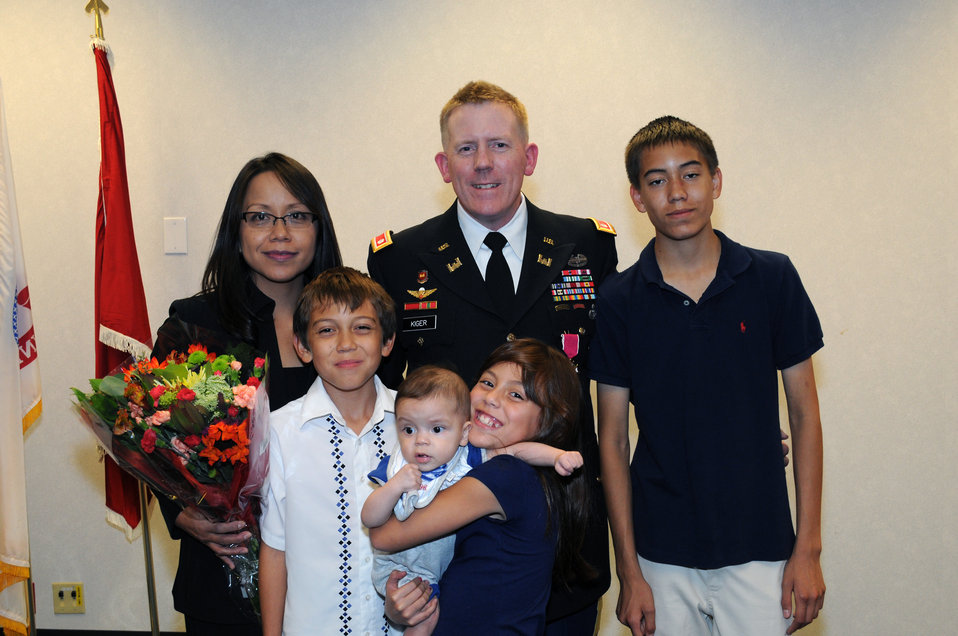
District deputy commander retires

Sacramento District Deputy Commander Lt. Col. Andy Kiger poses with his wife and children at his retirement ceremony in Sacramento, Calif., Oct. 21, 2011. Kiger received a Presidential Certificate of Appreciation and a Legion of Merit for his 23 years of service to the nation.